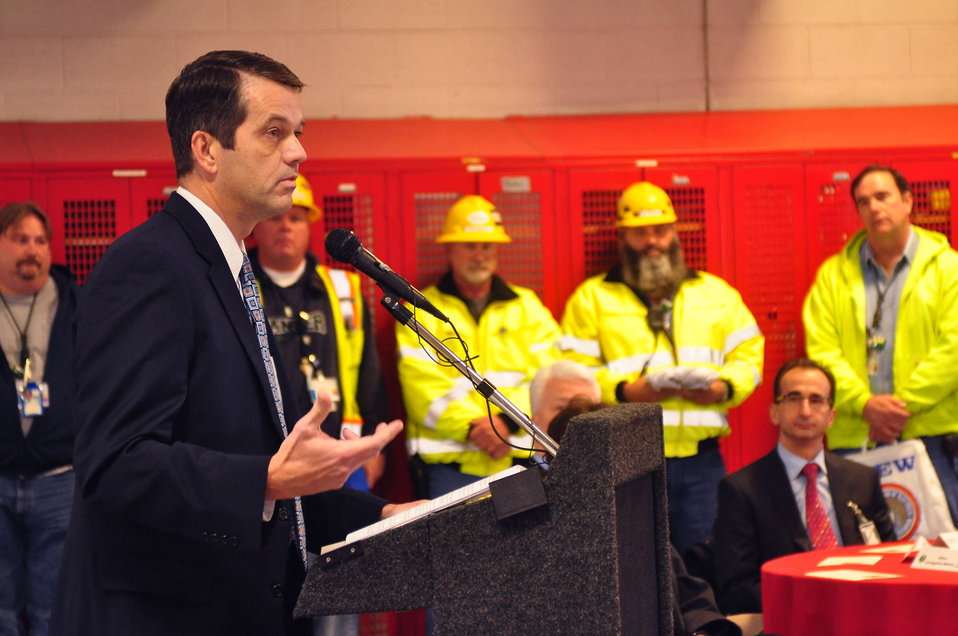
Last Part of K-25 Coming Down Oak Ridge 2013

13-157-1 DOE photo Lynn Freeny 12-19-2013 Mark Whitney DOE ORO EM Manager Oak Ridge Tennessee